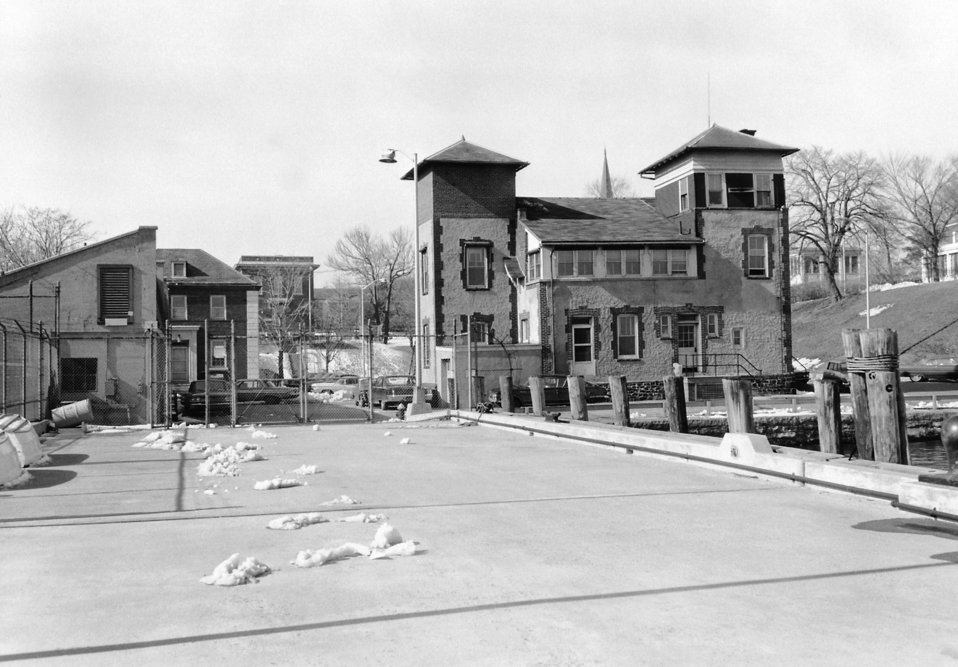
A number of buildings at the Rosebank Quarantine Station located in Staten Island, New York, 1967.